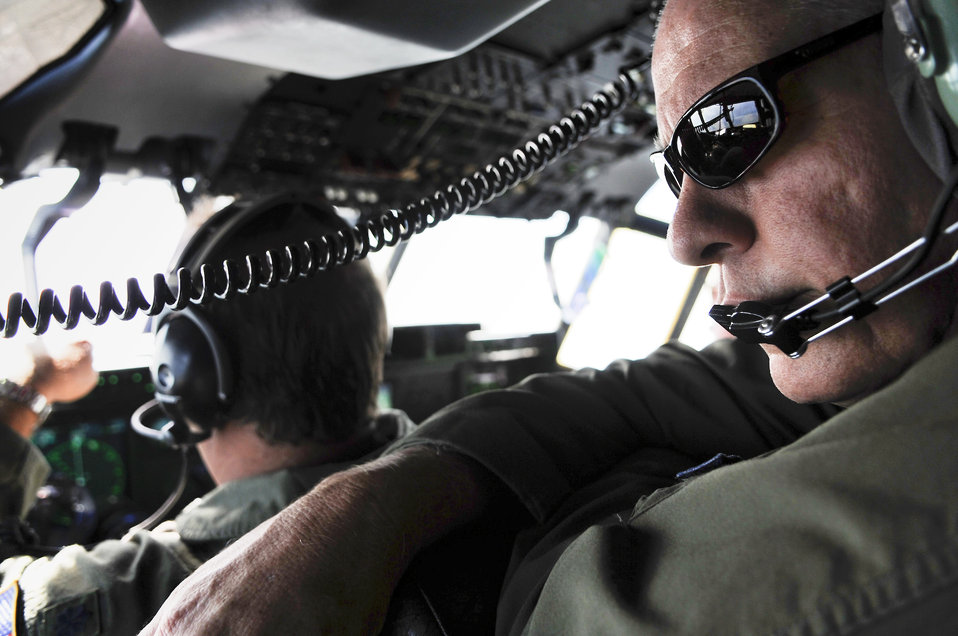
Training with the 'Hurricane Hunters'

Lt. Col. Mark Stevens looks out over the horizon during a training mission flight June 7 over the Caribbean from St. Croix, V.I. The Hurricane Hunters of the 53rd Weather Reconnaissance Squadron conducts part of their training from their operations center in St. Croix at the start of the active season which began June 1. Colonel Stevens is a navigator with the squadron.